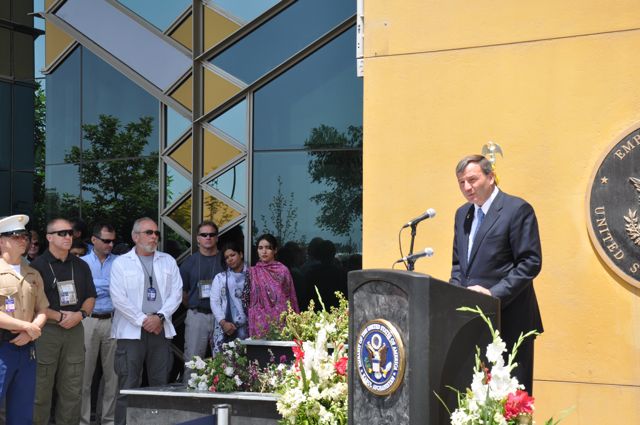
Memorial Day at US Embassy in Kabul

Ambassador Eikenberry reads the names of the fallen.